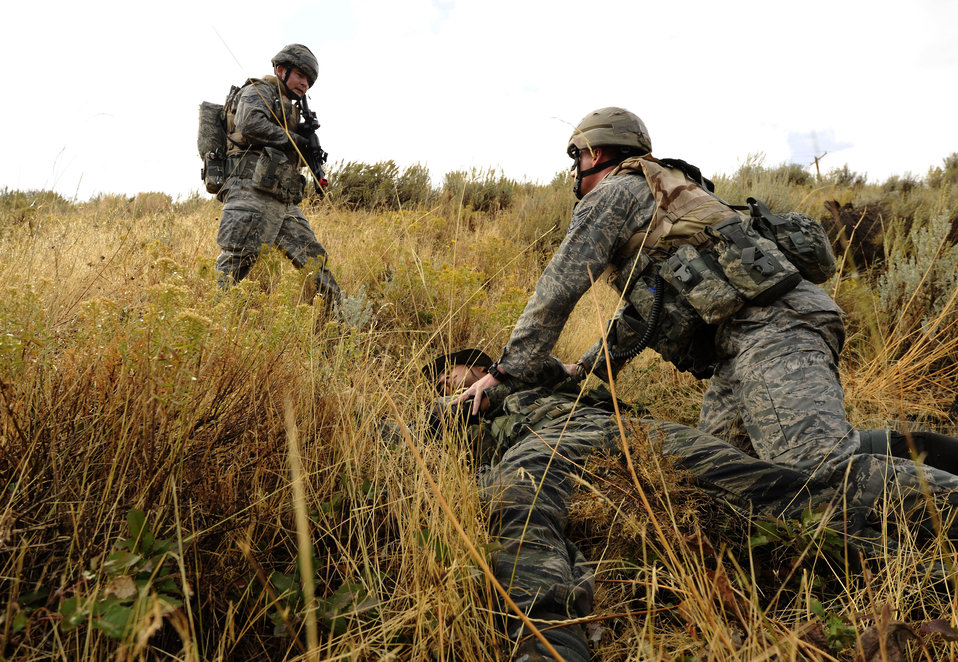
Operational Readiness Exercise 10-4

Members of the 419th Security Forces Squadron search a fatally wounded